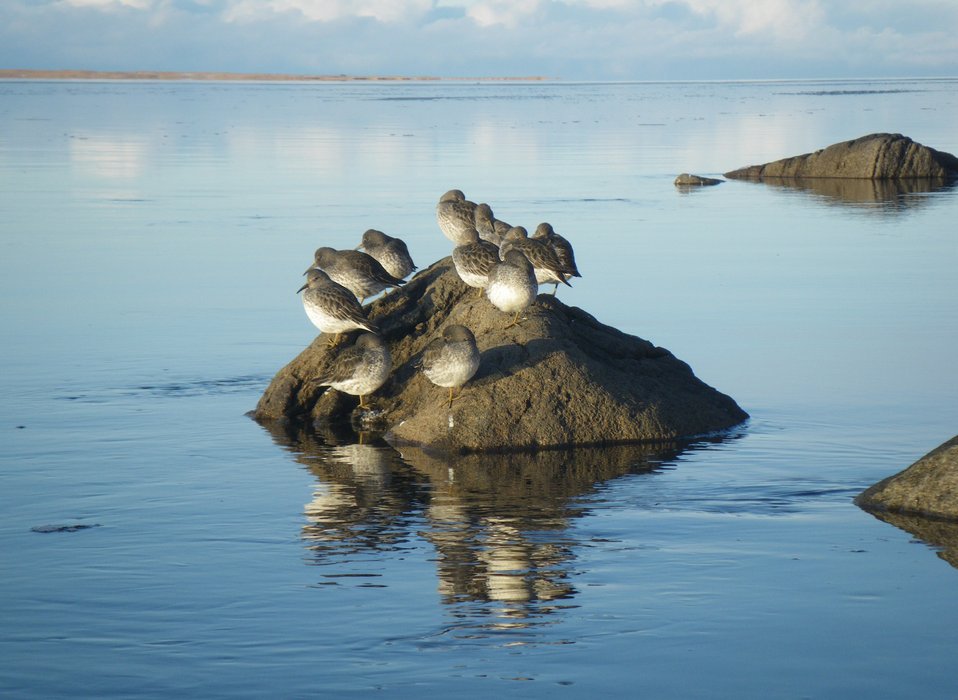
Rock Sandpiper in winter

izembek Lagoon, Izembek National Wildlife Refuge
Photo by Kristine Sowl,
USFWS, Public Domain